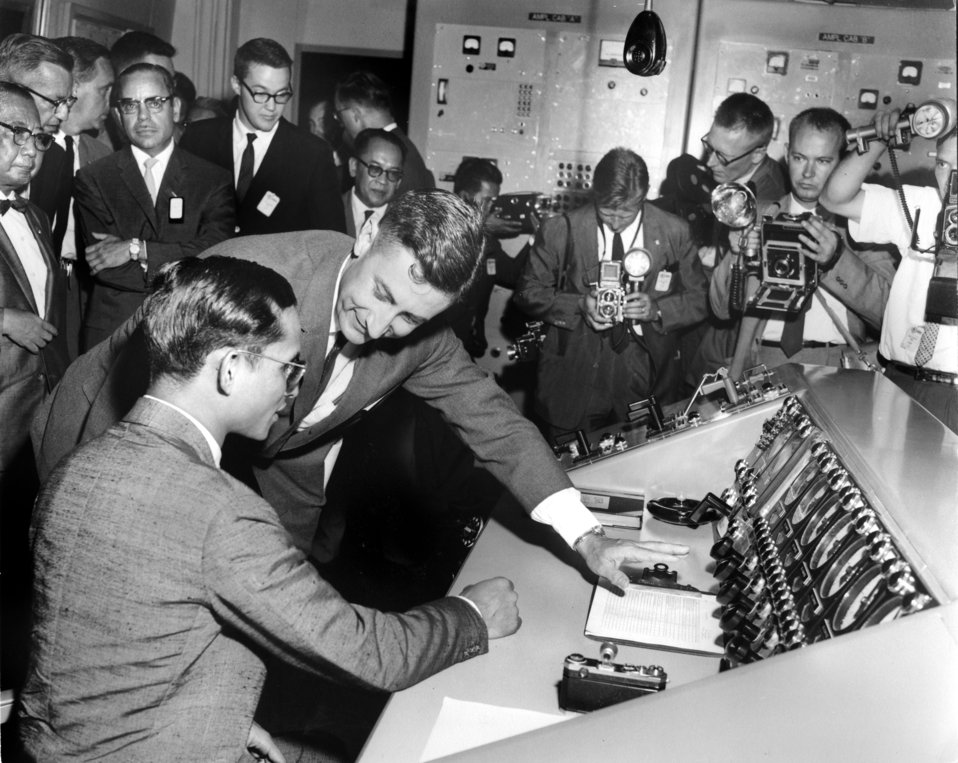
King of Thailand Bhumibol Adulyadej with Photographers ORNL 1960 Oak Ridge

60-0619 DOE photo Ed Westcott 7-9-1960 ORNL Oak Ridge Tennessee